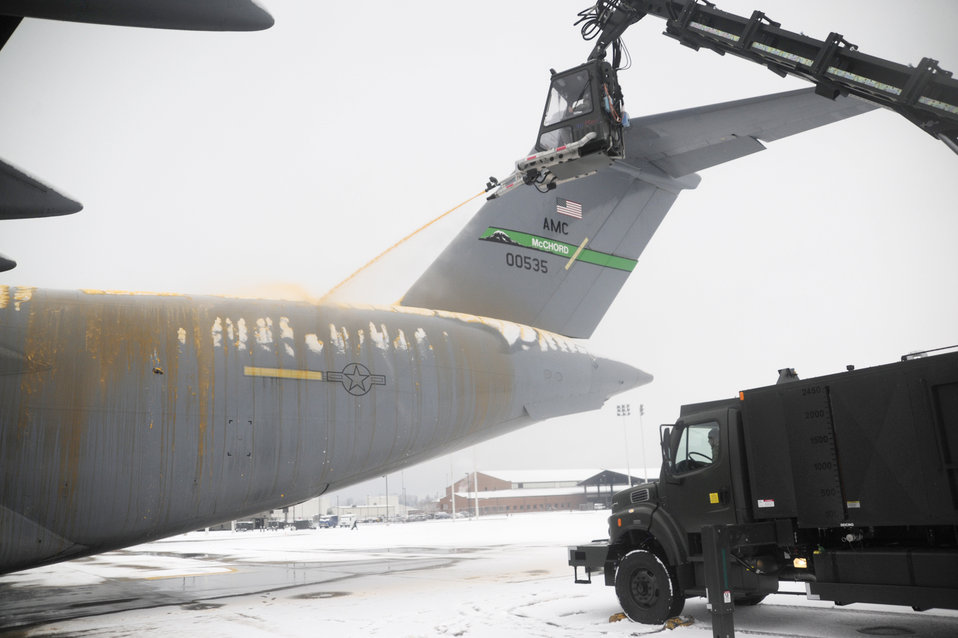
Snow sorties

Tech. Sgt. Mark Heius, in truck, operates a deicing truck as Airman 1st Class A. Garcia deices a C-17 Globemaster III before a mission Nov. 22, 2010, during the first snowfall of the season at Joint Base Lewis-McChord, Wash. Both Airmen are assigned to the 62nd Aircraft Maintenance Squadron.